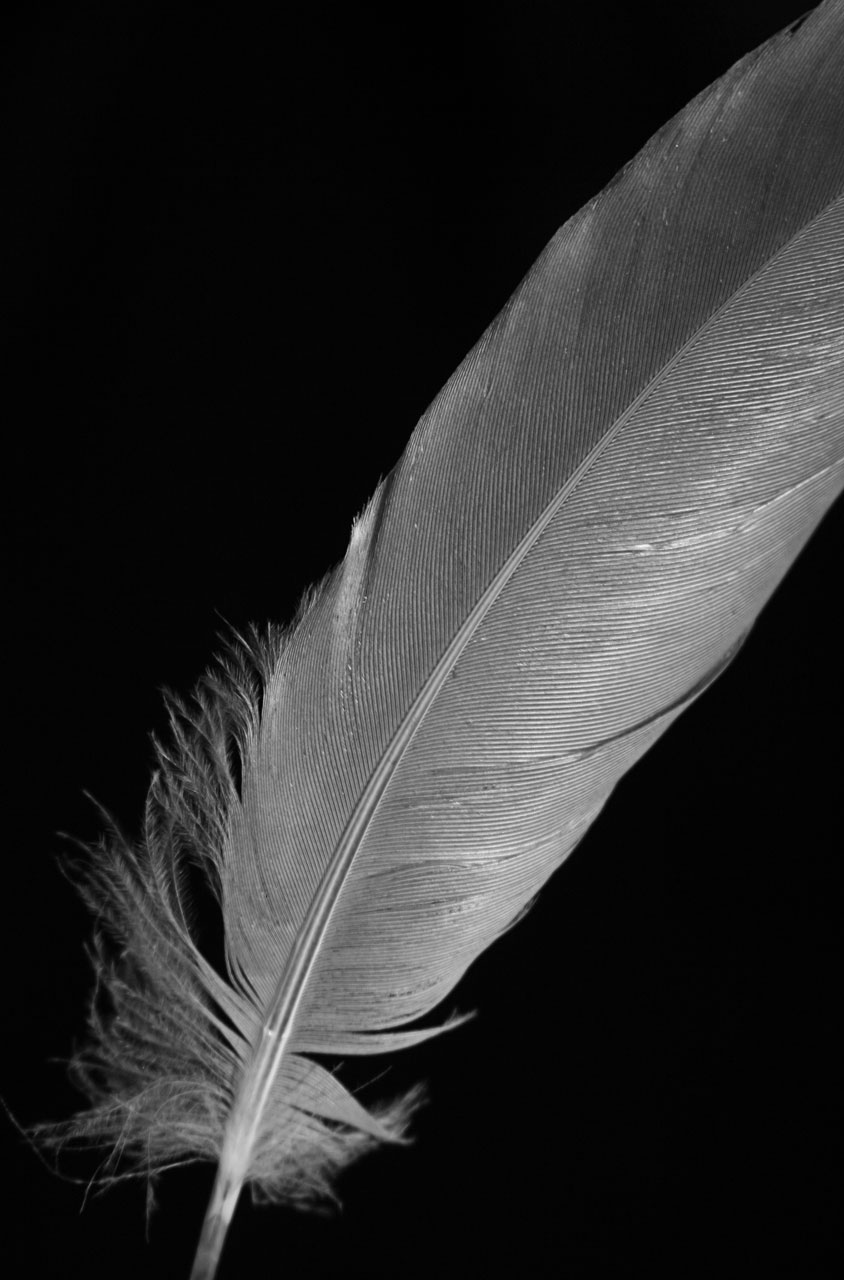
B and w feather

Single black and white feather.